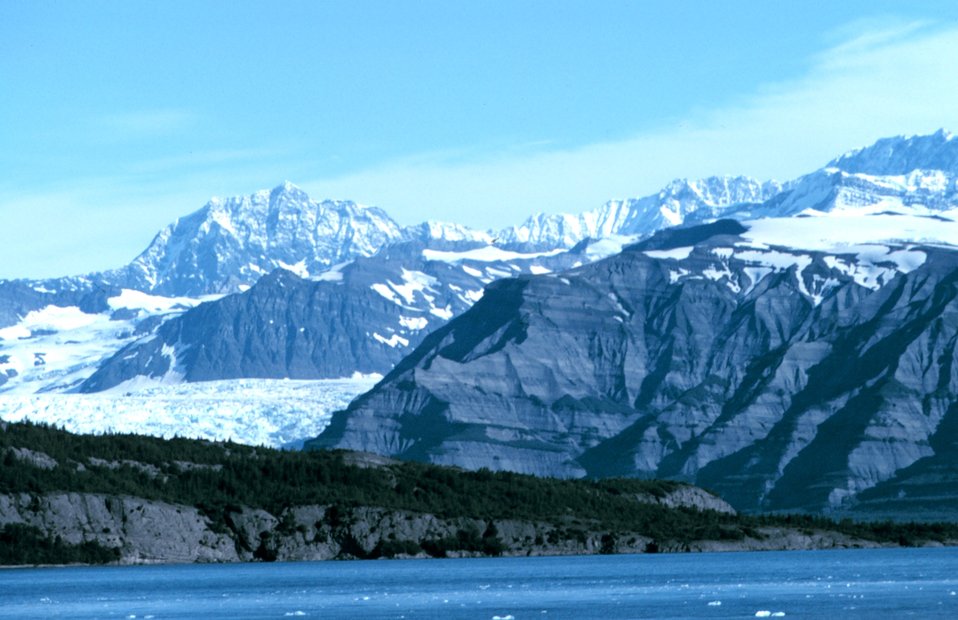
Tann Fjord area of Icy Bay.